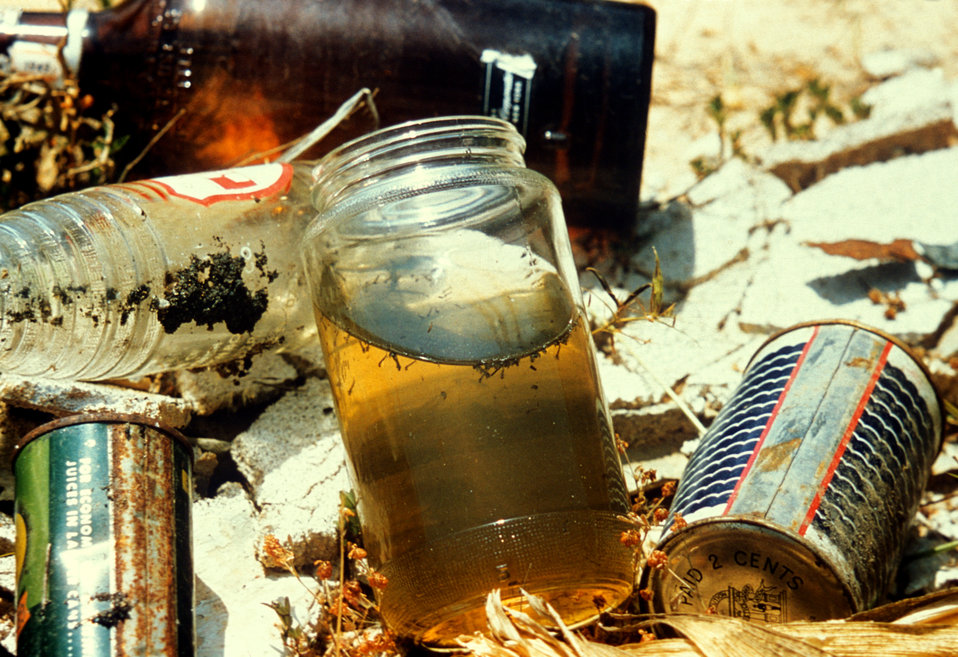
Domestic mosquitoes are seen here breeding in jars of rainwater.